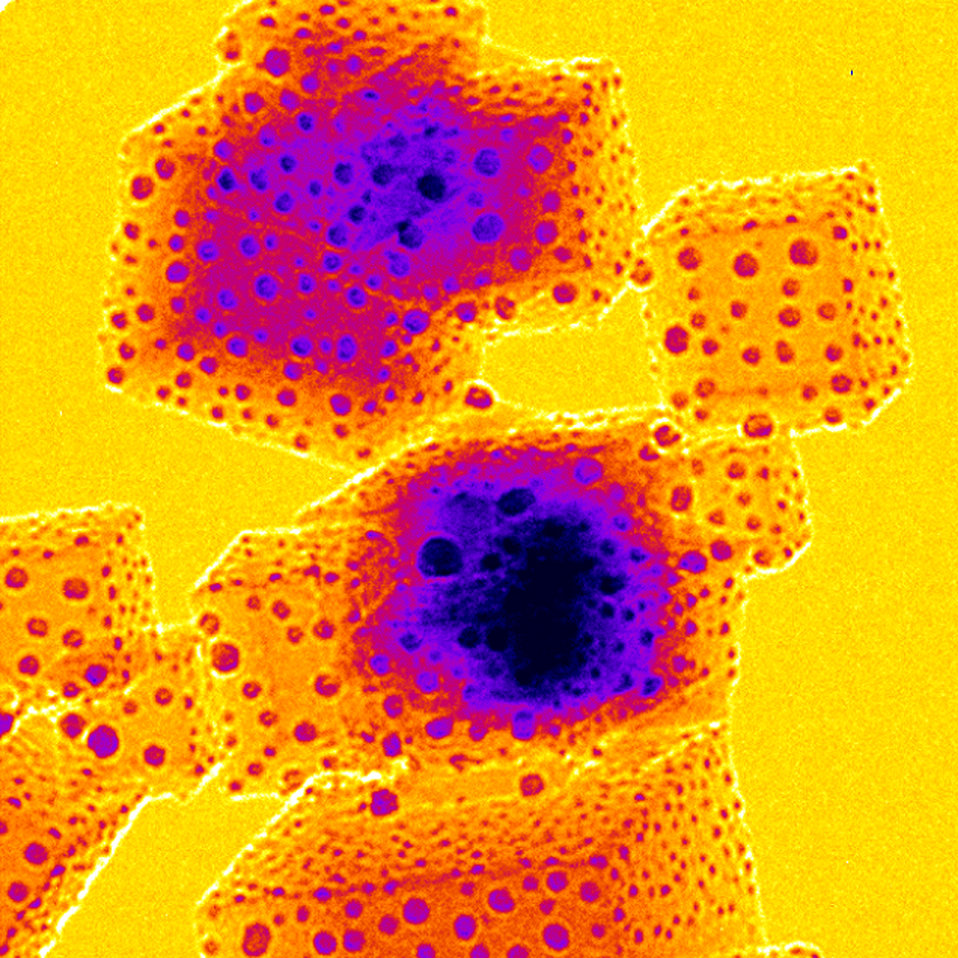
Magnesium Oxide Dice

NIST scientists are developing new three-dimensional chemical imaging methods. Using a scanning transmission electron microscope, a tilting stage, and sensitive detectors, NIST researchers can construct images that reveal both the chemical components and the complex shapes of crystal structures. This image shows cubes of magnesium oxide. Nanoscale particles of gold were deposited on the crystal faces to help define the surface topography.